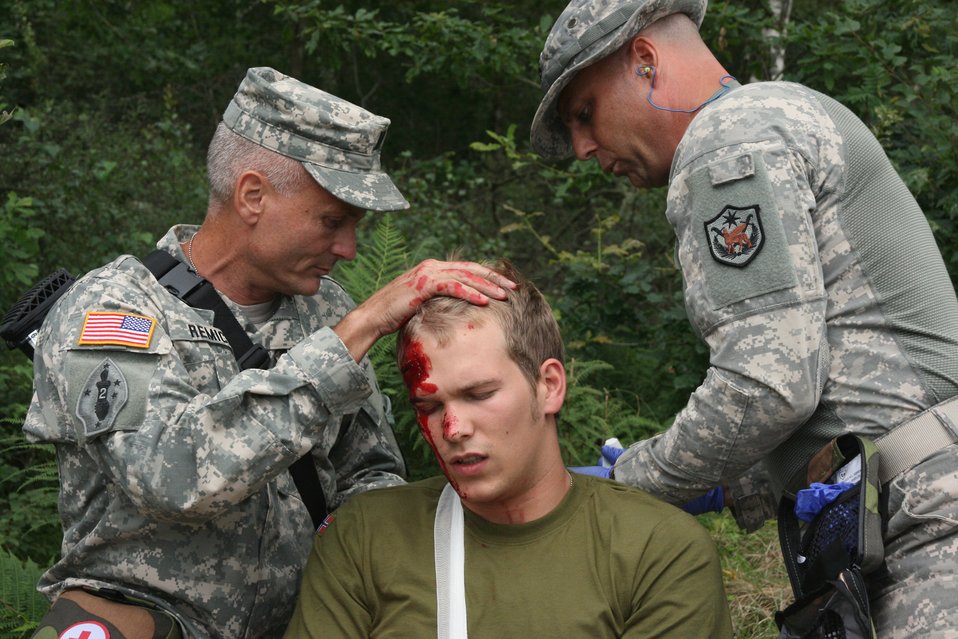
Combat Casualty Care exercise

Army Capt. Daryl Remick (left) and Lt. Col. Joel Winton (right) tend to a